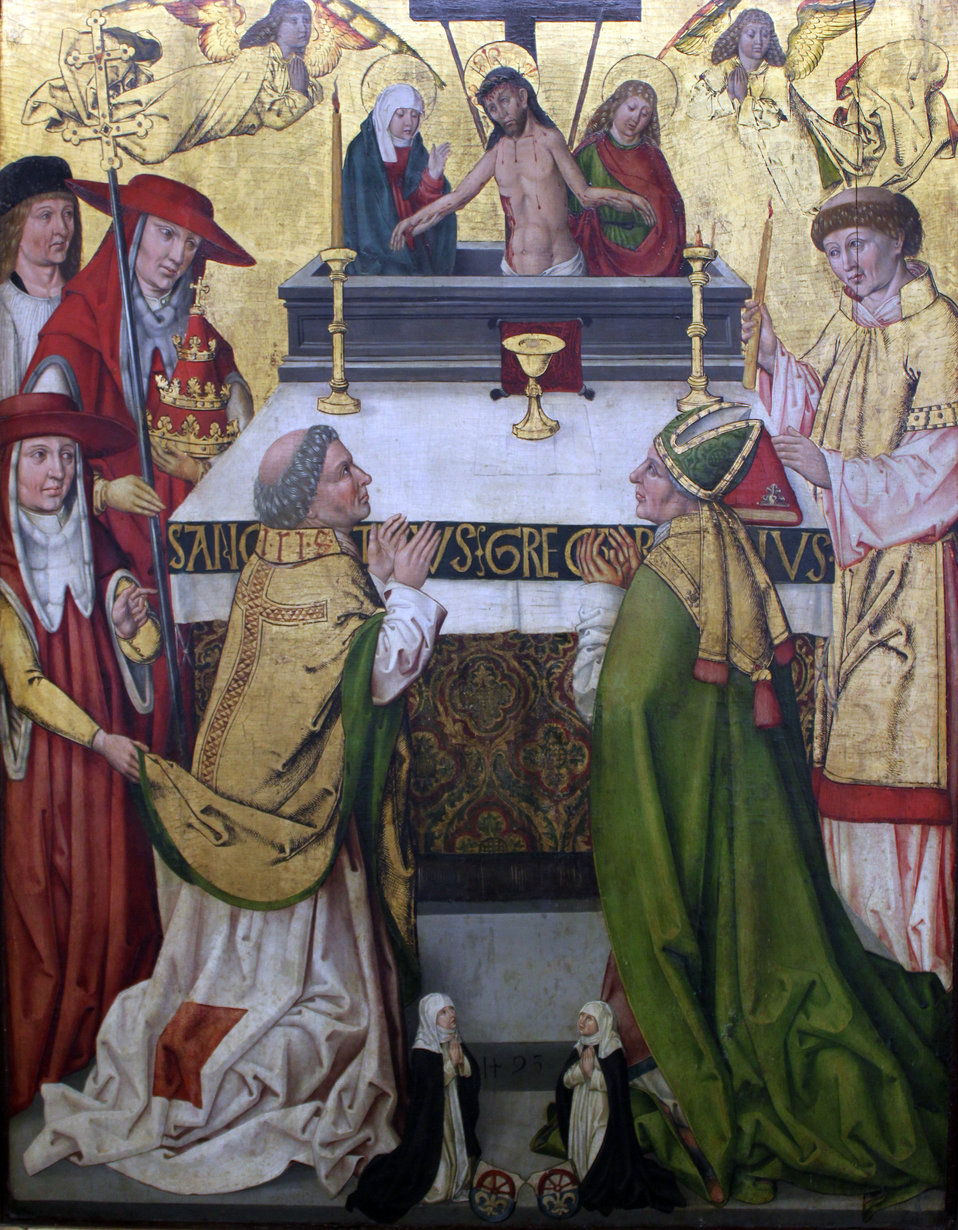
1493 Messe des Hl. Gregor anagoria